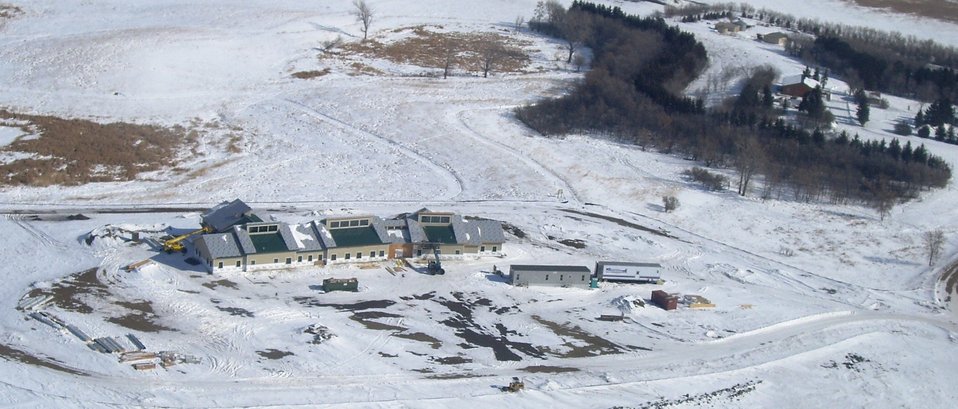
Audubon National Wildlife Refuge Headquarters and Visitor Center Aerial View

On a cold day in February 2010 at Audubon National Wildlife Refuge in North Dakota. The building was enclosed and crews continued to work in order to finish on time.